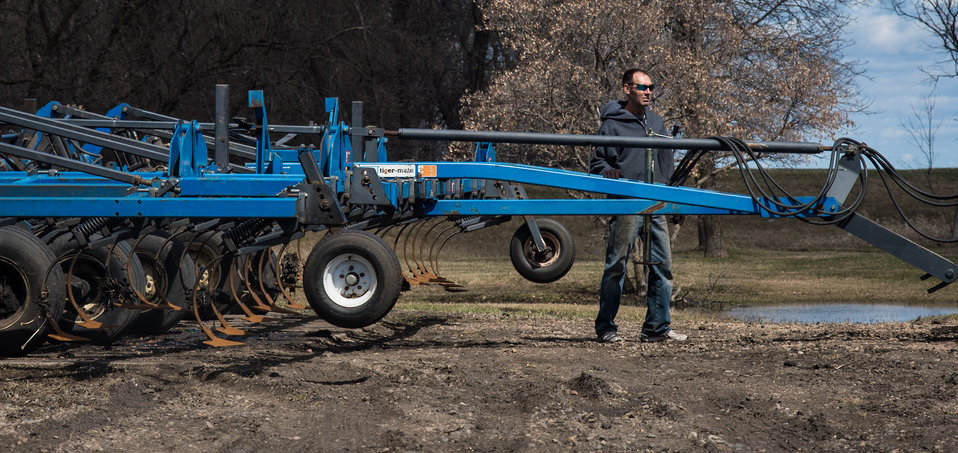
Jeff Hoff at his farmstead in Perley, MN, on Tuesday, April 30, 2013. With the assistance of the U.S. Department of Agriculture (USDA), he was able to build up and modify an earthen dike (seen in background) that holds back flood waters around his home, structures and and farm equipment. To learn about the USDA Red River Basin Initiative, see www.mn.nrcs.usda.gov/news/features13/RRBI.html.